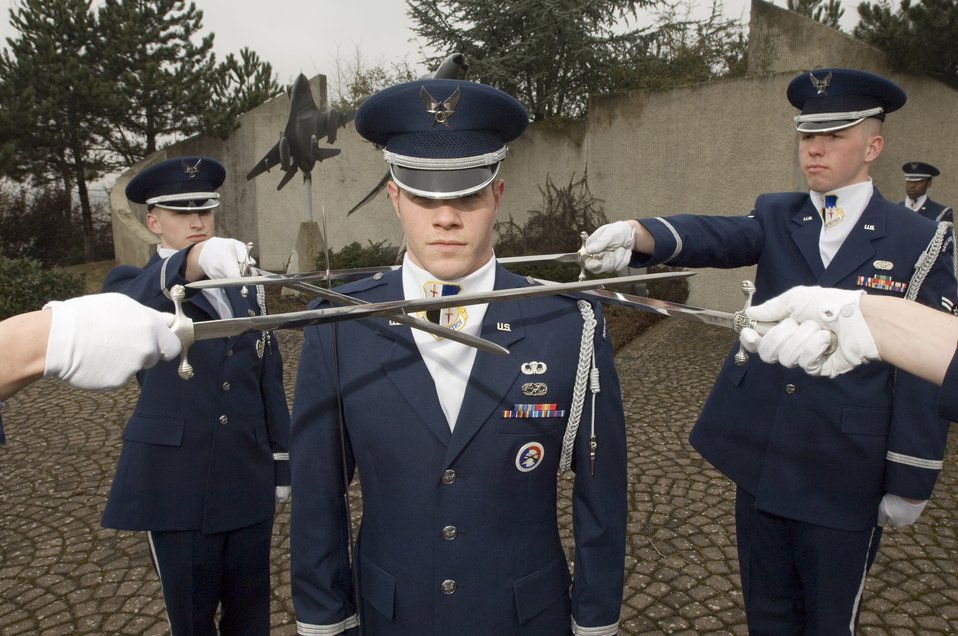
Sabre Drill Team

First Lt. Brian Cooper stands in the middle of fellow Sabre Drill Team members Airmen 1st Class Dallas Smith and Jacob McCarty, left and right, respectively, at a practice session at Spangdahlem Air Base, Germany, on Tuesday, March 21, 2006.